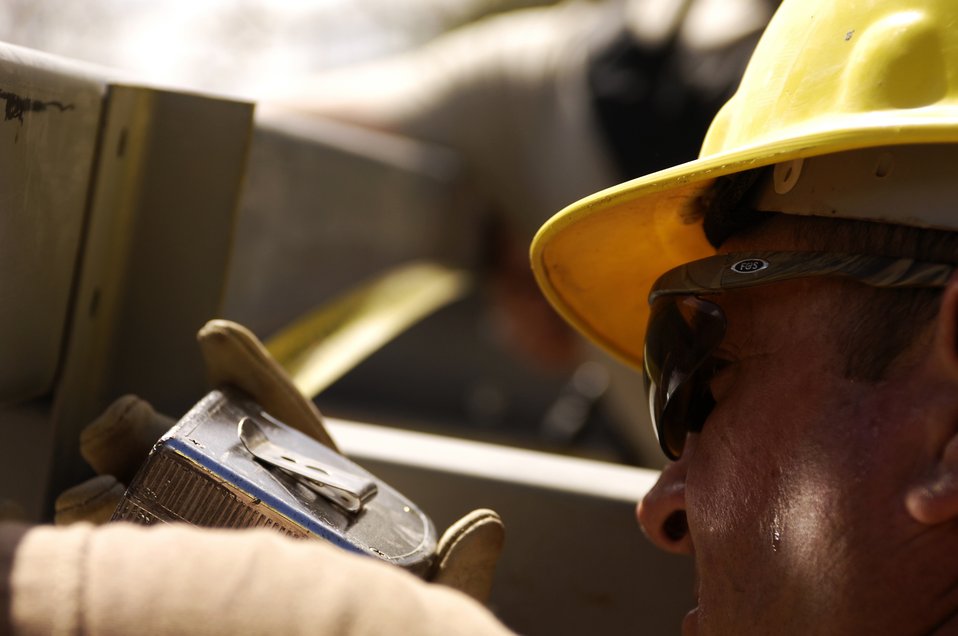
New Horizons-Nicaragua 2007

Army Sgt. Doug Magee, deployed to Nicaragua with the 820th Expeditionary RED HORSE Squadron, installs rafters at a new school in San Martin de la Calera, during New Horizons-Nicaragua 2007 March 23. The school will serve about 100 children who currently walk four miles to reach the closest school. Sergeant Magee is from the South Dakota National Guard's 153rd Engineering Battalion. New Horizons - Nicaragua 2007 is a $7.25 million joint U.S. and Nicaraguan humanitarian and training exercise that will also provide a medical clinic, as well as free health and veterinary care in the Nicaraguan countryside.